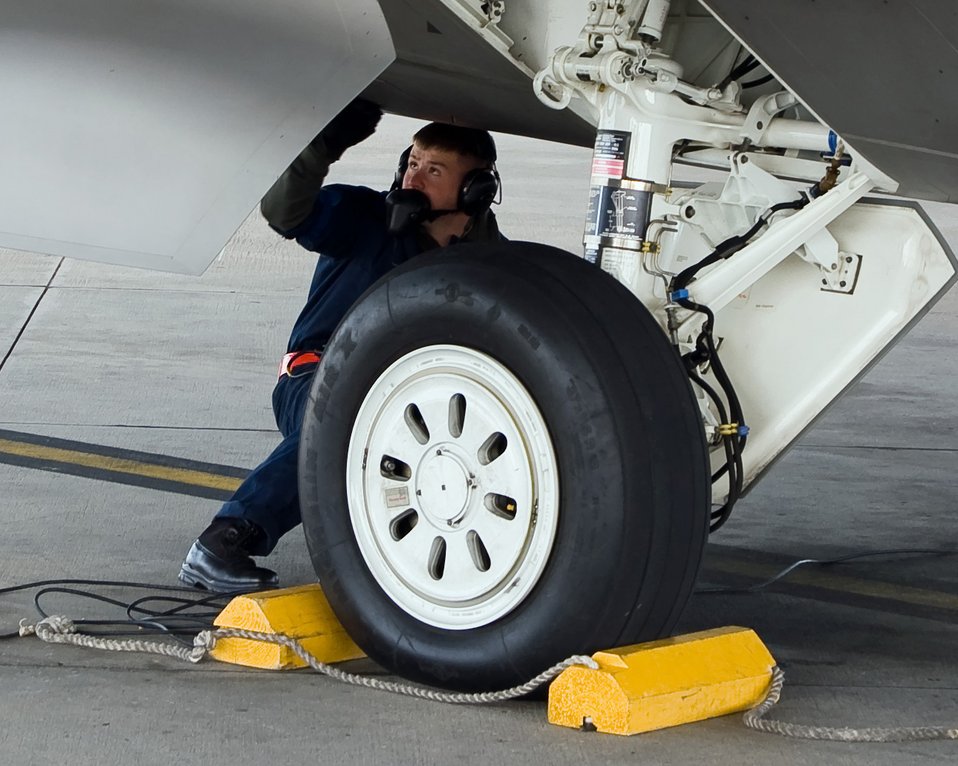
Elmendorf Airmen complete first F-22 deployment

Staff Sgt. Charlie Grantham prepares to launch an F-22 Raptor Feb. 4 at Tyndall Air Force Base, Fla. Members of the 3rd Wing and Air Force Reserve Command's 477th Fighter Group from Elmendorf AFB, Alaska, combined for its first F-22 Raptor deployment to Tyndall AFB for Combat Archer. The 132 Reserve and active-duty Airmen and eight F-22s from Alaska were in Florida for Weapons System Evaluation Program training. Sergeant Grantham is a 90th Aircraft Maintenance Unit crew chief.